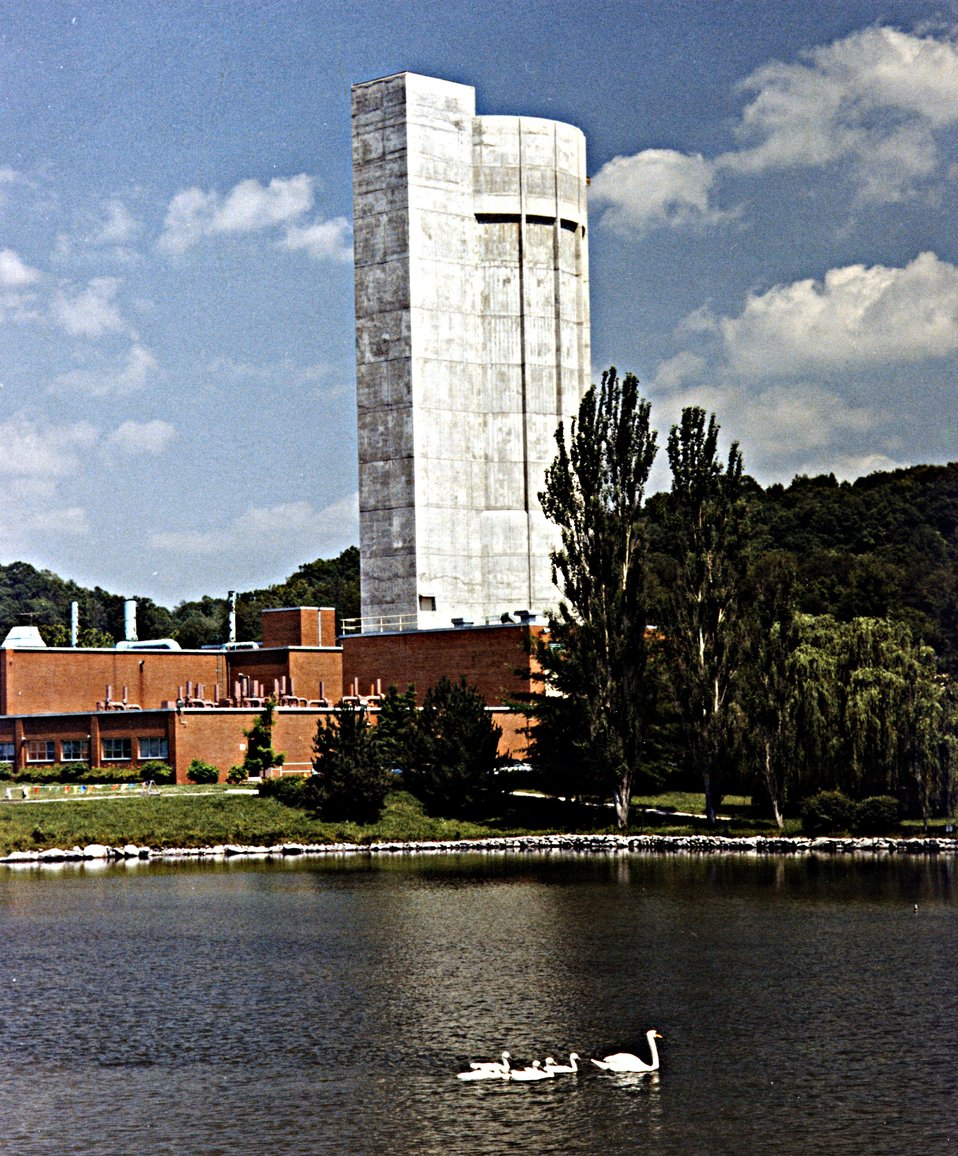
ORNL'S RENOVATED HOLIFIELD RADIOACTIVE ION BEAM FACILITY.

ORNL'S NEWLY REVAMPED HOLIFIELD RADIOACTIVE ION BEAM FACILITY WAS OFFICIALLY DEDICATED IN DECEMBER 1996, HAVING GENERATED ITS FIRST RADIOACTIVE BEAM IN AUGUST 1996. ORNL'S RENOVATED ACCELERATOR IS AN IMPORTANT TOOL FOR RESEARCHERS FROM AROUND THE WORLD TO DISCOVER NEW ELEMENTS AND TO UNLOCK SUCH MYSTERIES AS HOW STARS FORM. WITH THE EXPERIMENTS DONE HERE RESEARCHERS HOPE TO ANSWER QUESTIONS ABOUT NUCLEAR PHYSICS AND NUCLEAR ASTROPHYSICS.